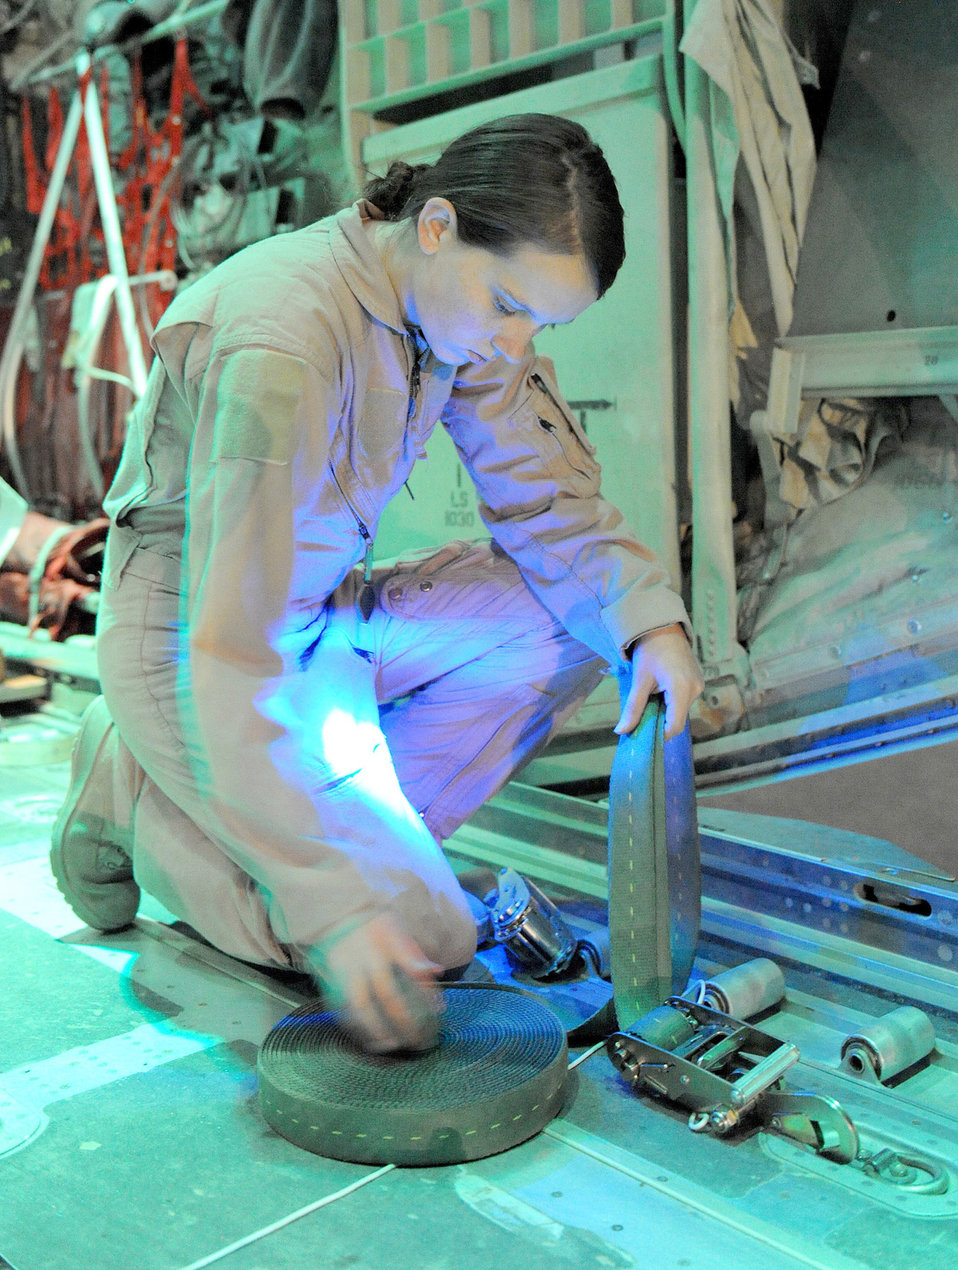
Supplies to remote Afghanistan bases

Airman 1st Class Rachael Orazine prepares to strap airdrop bundles on a C-130J Super Hercules Oct. 7, 2010, for a remote forward operating base in Afghanistan. Airman Orazine is a loadmaster with the 772nd Expeditionary Airlift Squadron, and hails from Gulfport, Miss.